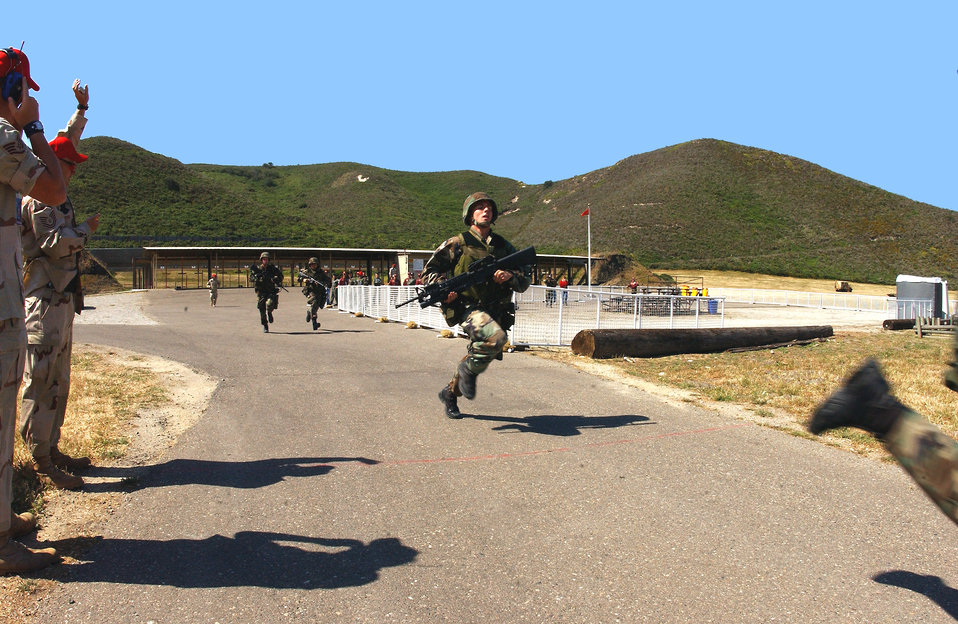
Run, run, run

VANDENBERG AIR FORCE BASE, Calif. -- Security forces personnel from the 91st Space Wing, aka